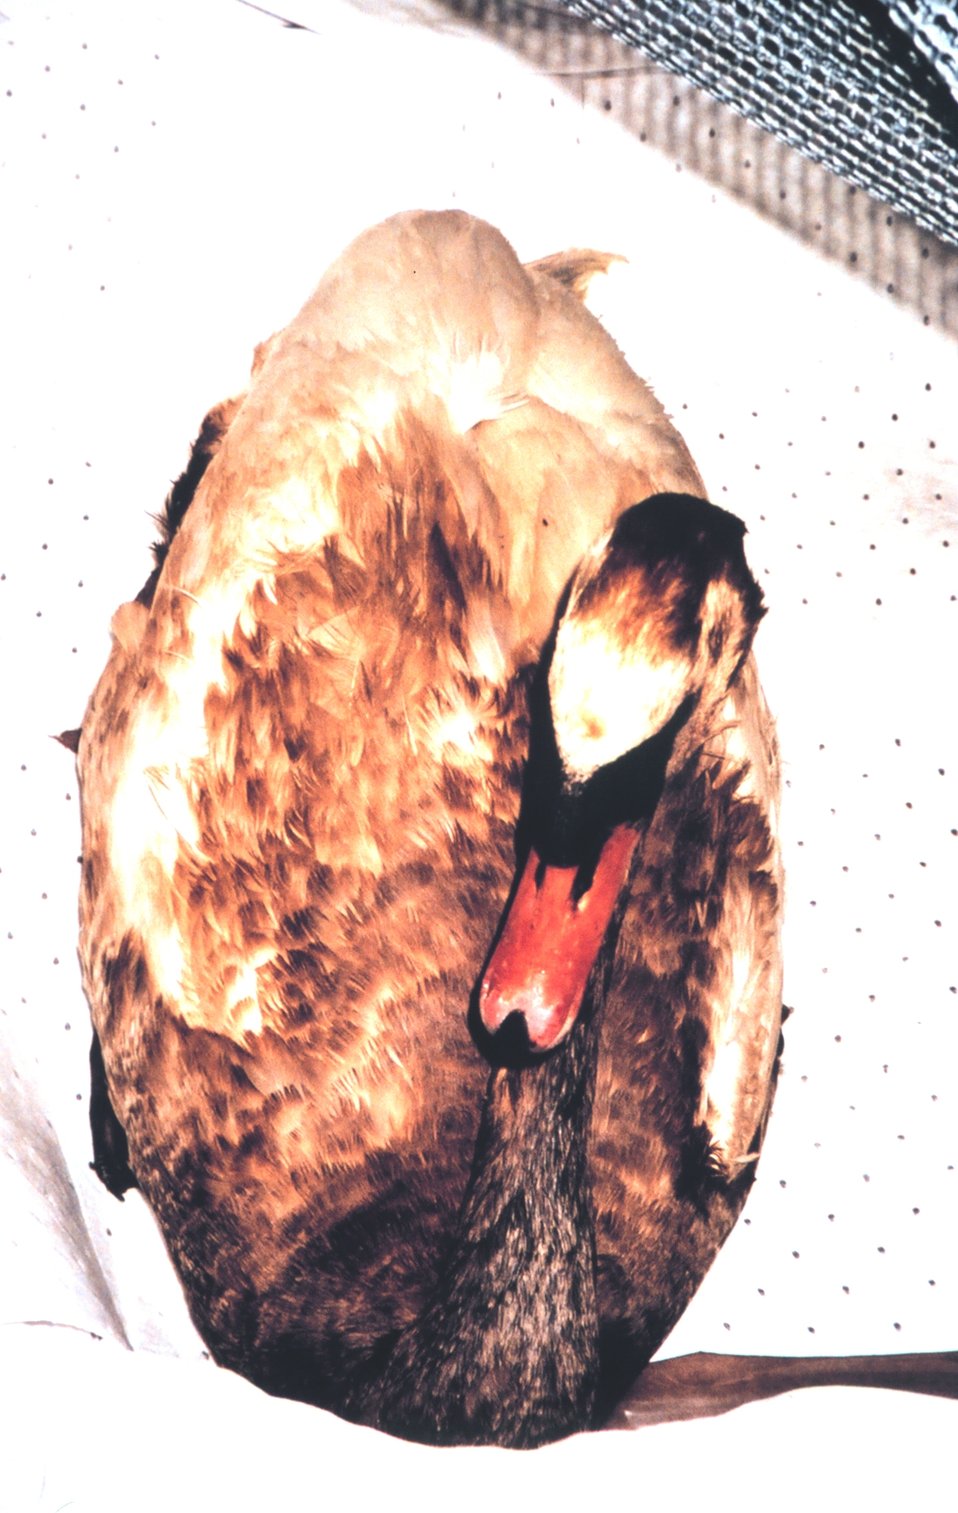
An oiled swan, one of many wildlife victims of the April 7th oil spill in Swanson Creek.